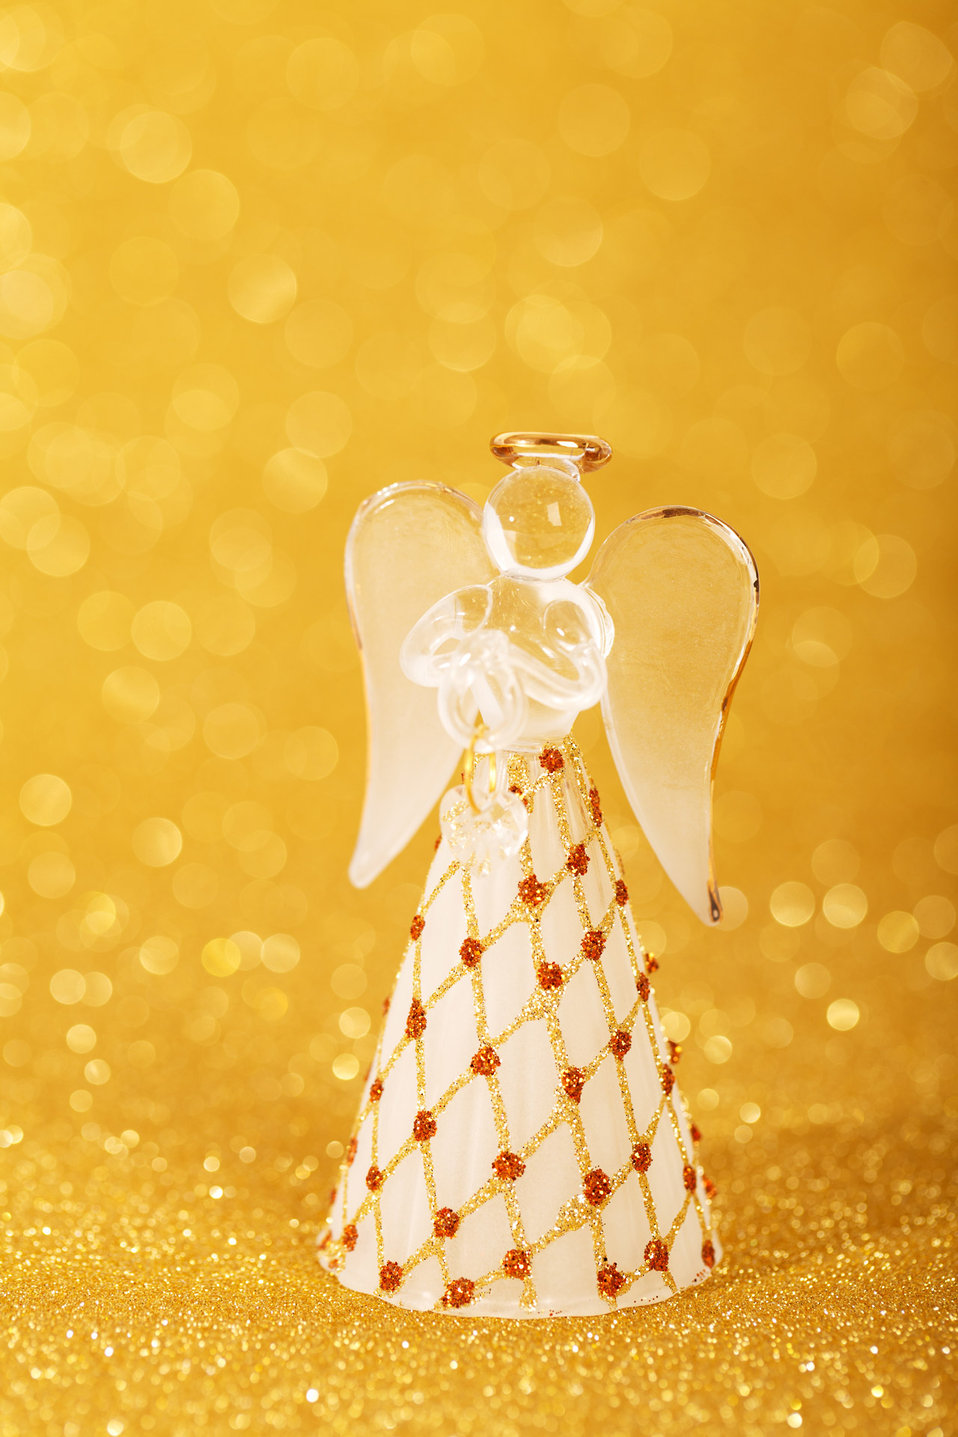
Christmas angel decoration on a yellow golden background.